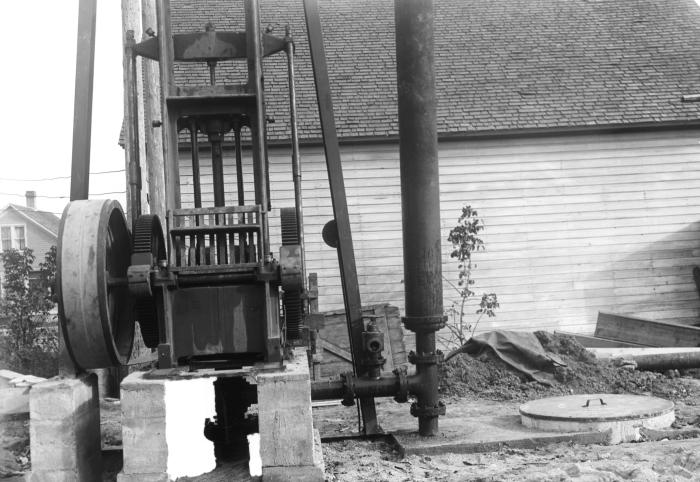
This historic 1920 photograph depicted a properly constructed 'drilled' well on the grounds of the Mountain Lake, Minnesota municipal water supply.